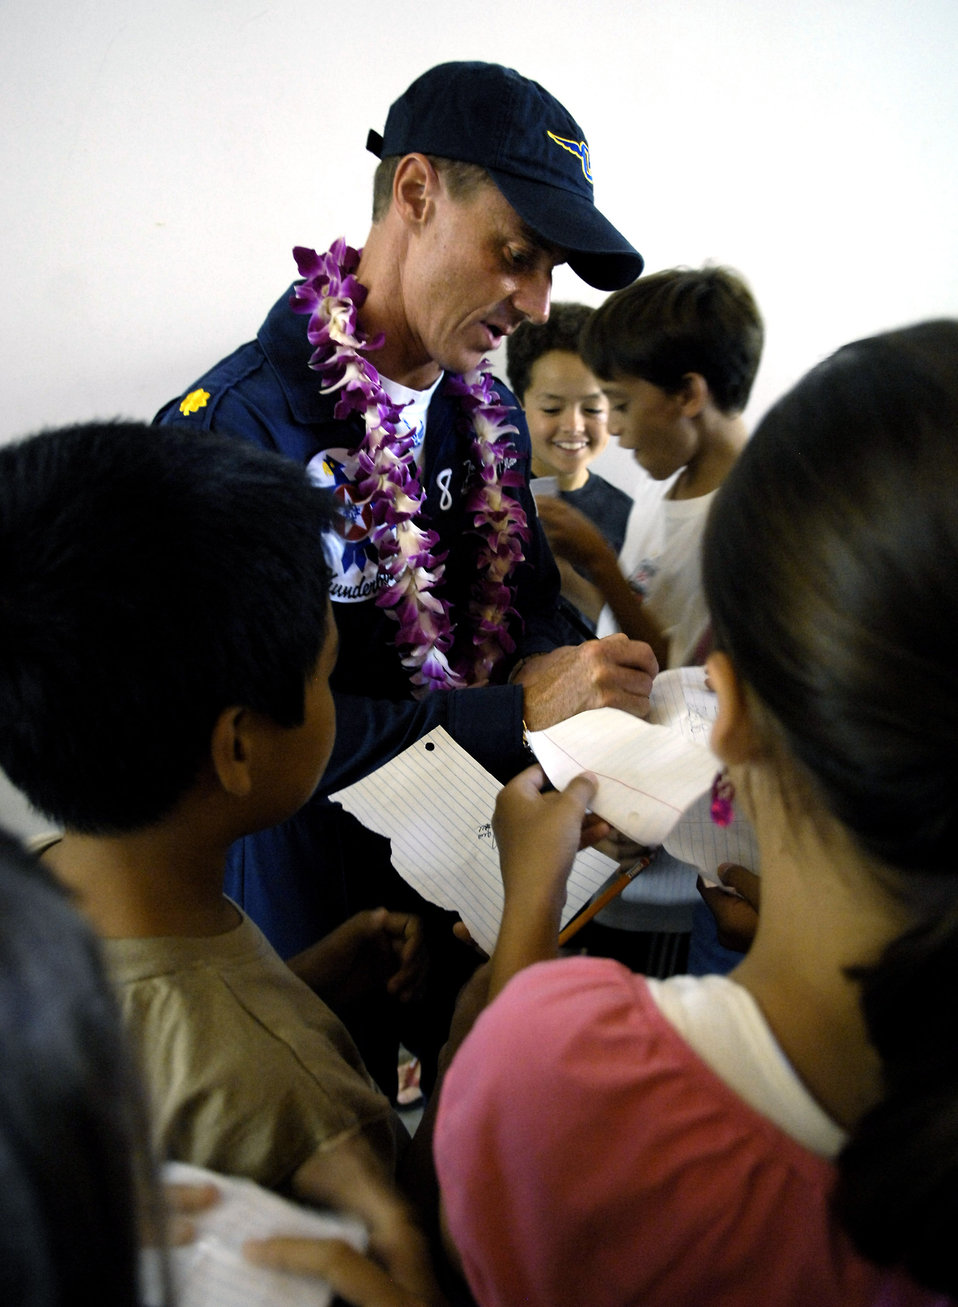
Thunderbirds visit school children during Air Force Week Honolulu

Maj. Tad Clark signs autographs for middle school children Sept. 14 at Punahou School in Honolulu. Members of the Air Force Demonstration Team, the Thunderbirds, made a community appearance at the school in Oahu as part of Air Force Week Honolulu.